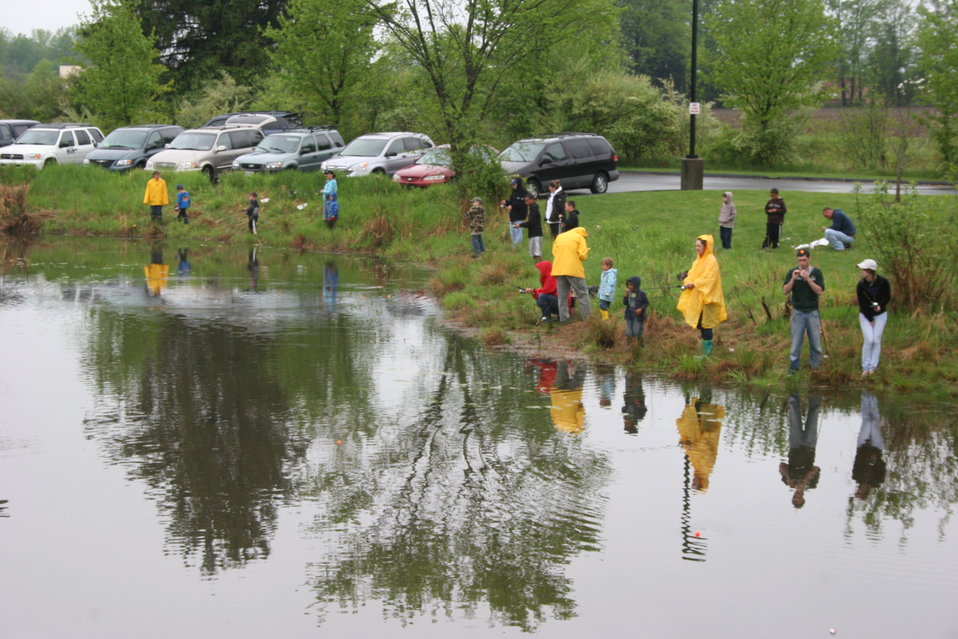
Fishing event at U.S. Fish and Wildlife Service Regional Office in Hadley, MA